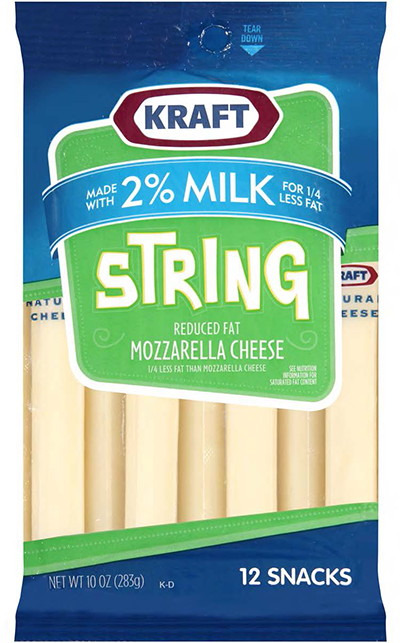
RECALLED – Cheese

October 25, 2013 – Product Recall – Kraft Voluntarily Recalls Some Varieties of Kraft And Polly-O String Cheese And String Cheese Twists Due to Premature Spoilage.